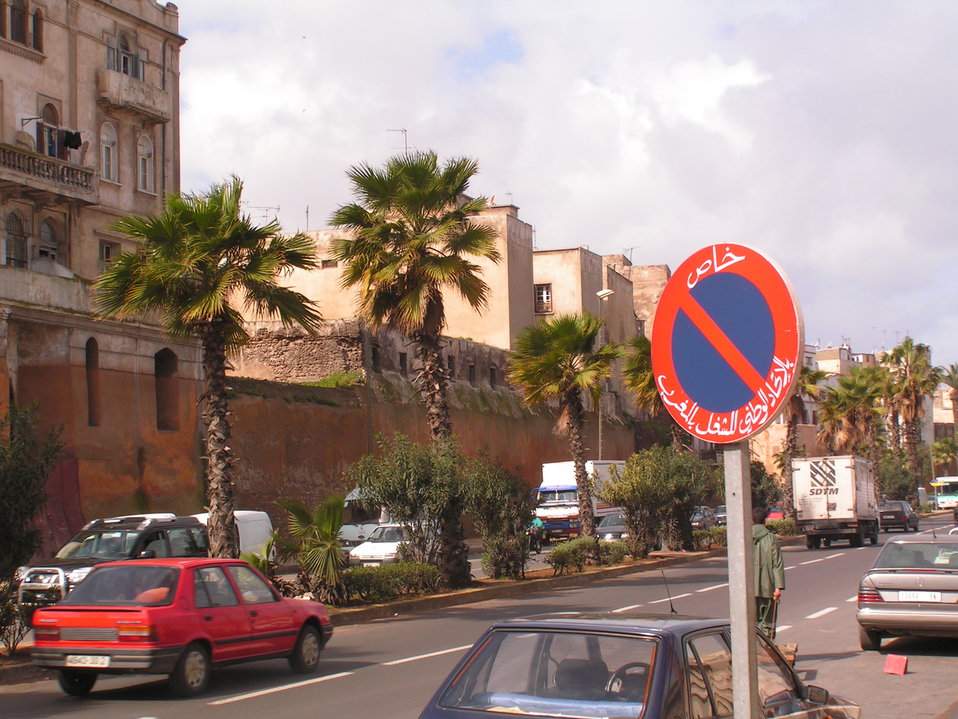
The walls of Old Medina in Casablanca, picture taken in March 2005